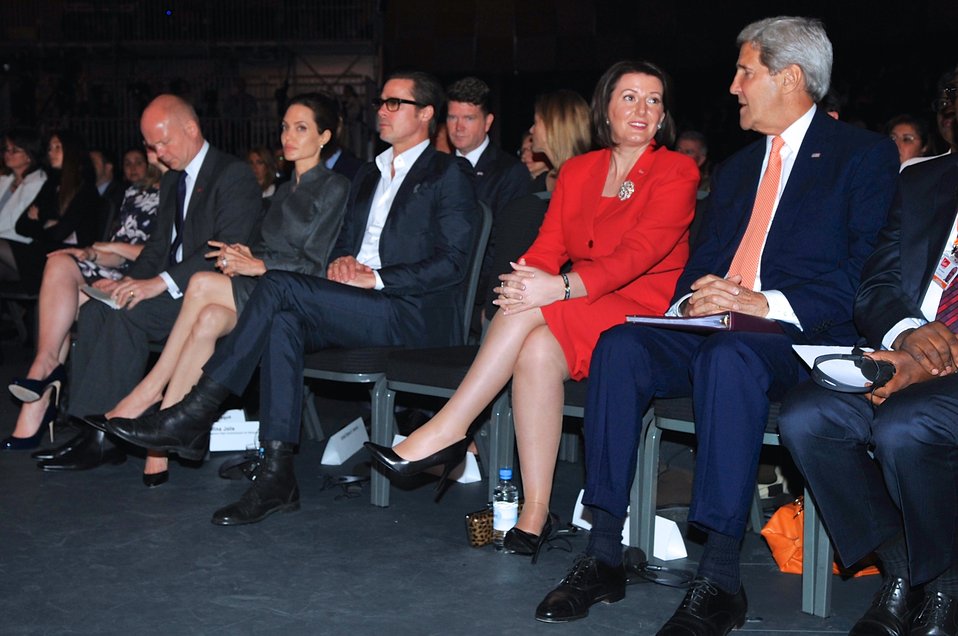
Secretaries Hague, Kerry Join Actors Jolie, Pitt in Call to End Sexual Violence

U.S. Secretary of State John Kerry chats with Ffion Jenkins, the wife of British Foreign Secretary William Hague, far left, as they join actors Angelina Jolie and Brad Pitt in London at the 2014 Global Summit to End Sexual Violence in Conflict, on June 13, 2014.